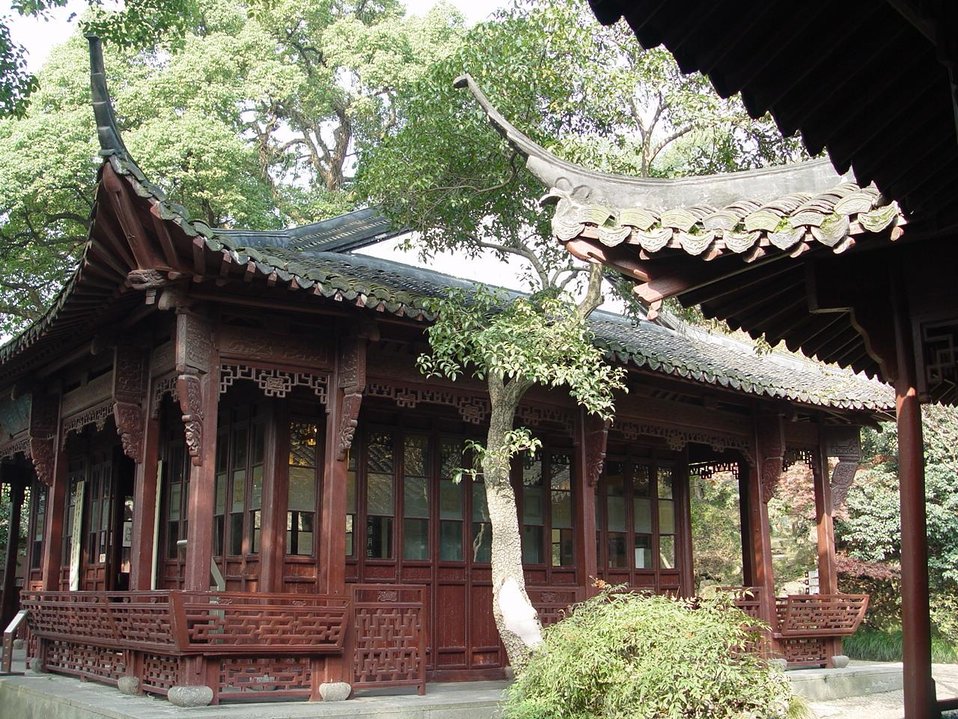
Xiling Society of Seal Arts, Hangzhou, Zhejiang Province, China Old buildings.